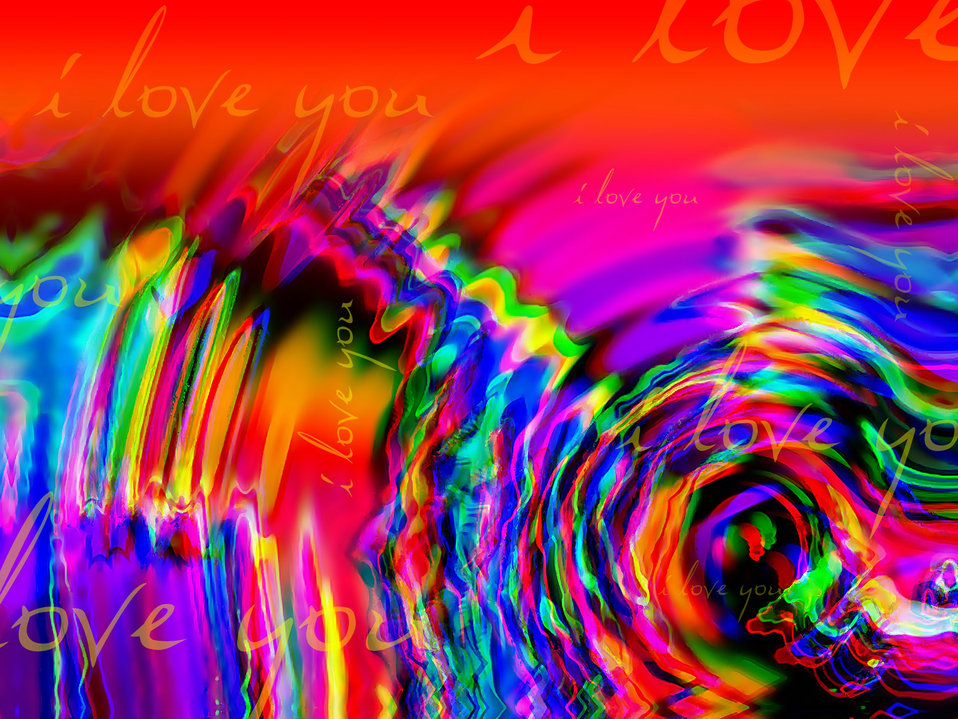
I love you

Declaration of love in neon colors.